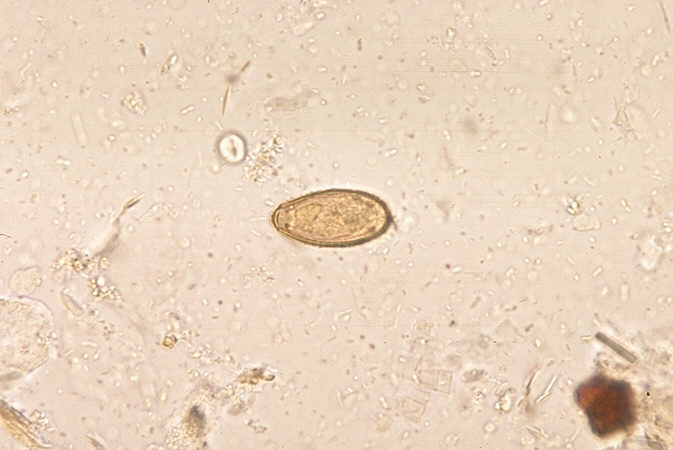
Clonorchis sinensis egg. Parasite.